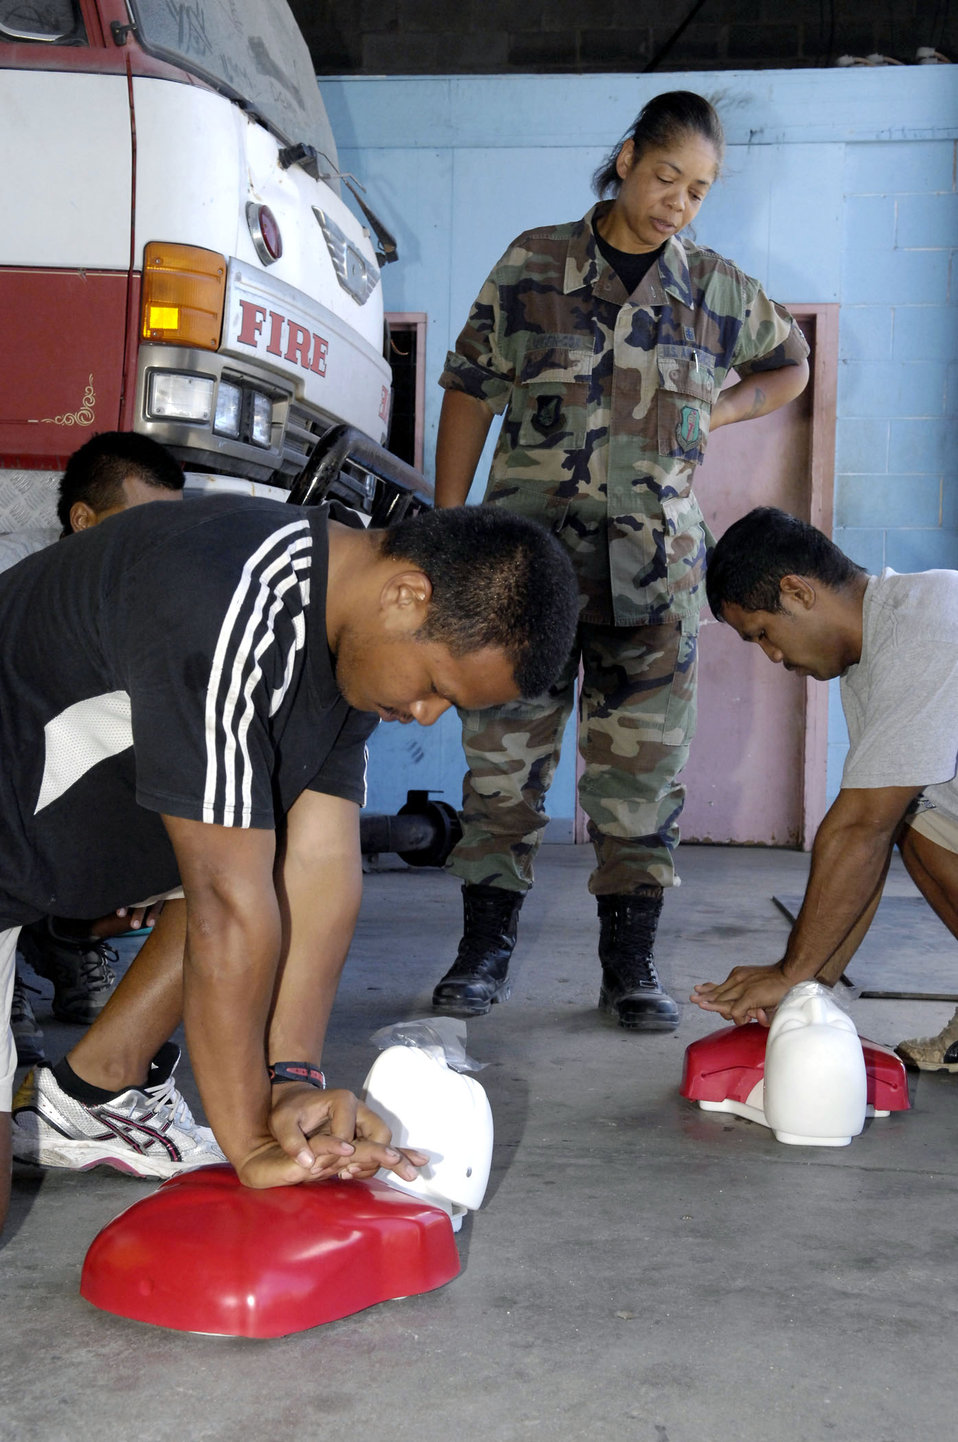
Reservist helps fellow firefighters in Nauru

Tech. Sgt. Michelle Bligen-Cox teaches CPR to a firefighter July 25 in the Republic of Nauru. Sergeant Bligen-Cox is part of a 12-person, joint-force U.S. Pacific Command team sent to provide assitance and training to caregivers and first responders on the small South Pacific island. She is assigned to the 35th Medical Group at Misawa Air Base, Japan.